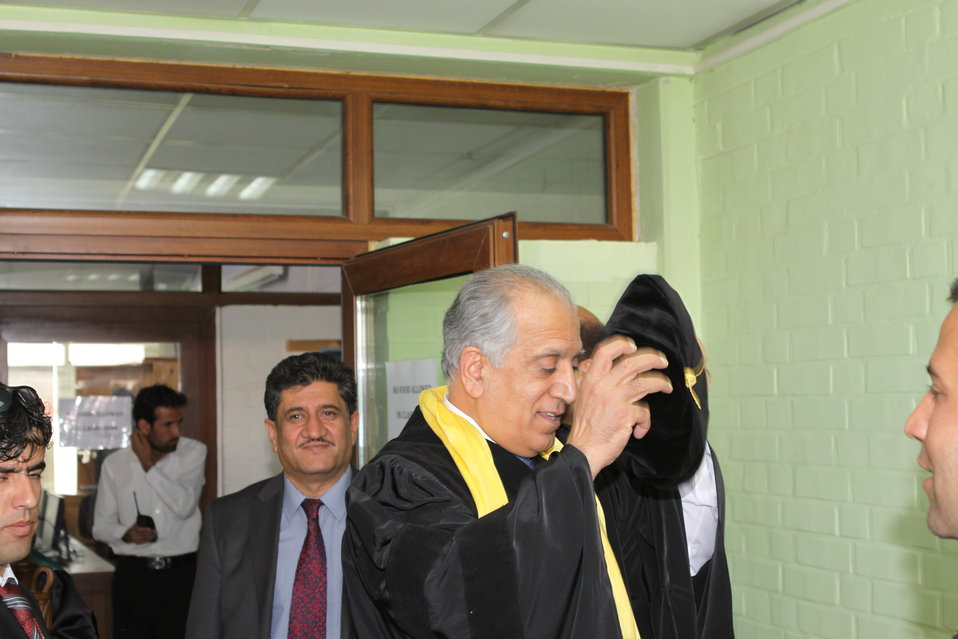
100526 AUAF Graduation 077